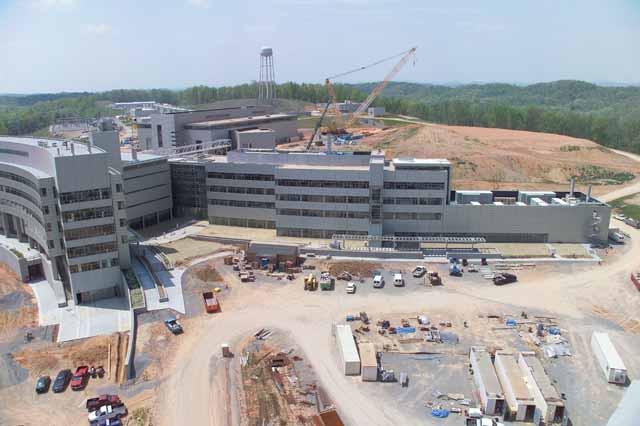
CONSTRUCTION OF THE SPALLATION NEUTRON SOURCE AT DOE'S OAK RIDGE NATIONAL LABORATORY.

THE SPALLATION NEUTRON SOURCE (SNS) IS AN ACCELERATOR BASED NEUTRON SOURCE BEING BUILT IN OAK RIDGE, TENNESSEE BY THE DEPARTMENT OF ENERGY. SCHEDULED FOR COMPLETION IN 2006, THE SNS WILL PROVIDE THE MOST INTENDS PULSED POWER NEUTRON BEAMS IN THE WORLD FOR SCIENTIFIC RESEARCH AND INDUSTRIAL DEVELOPMENT.